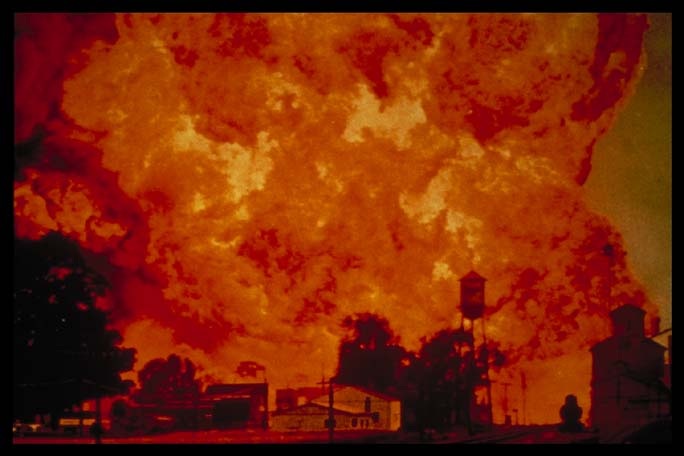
Wildland/Urban interface